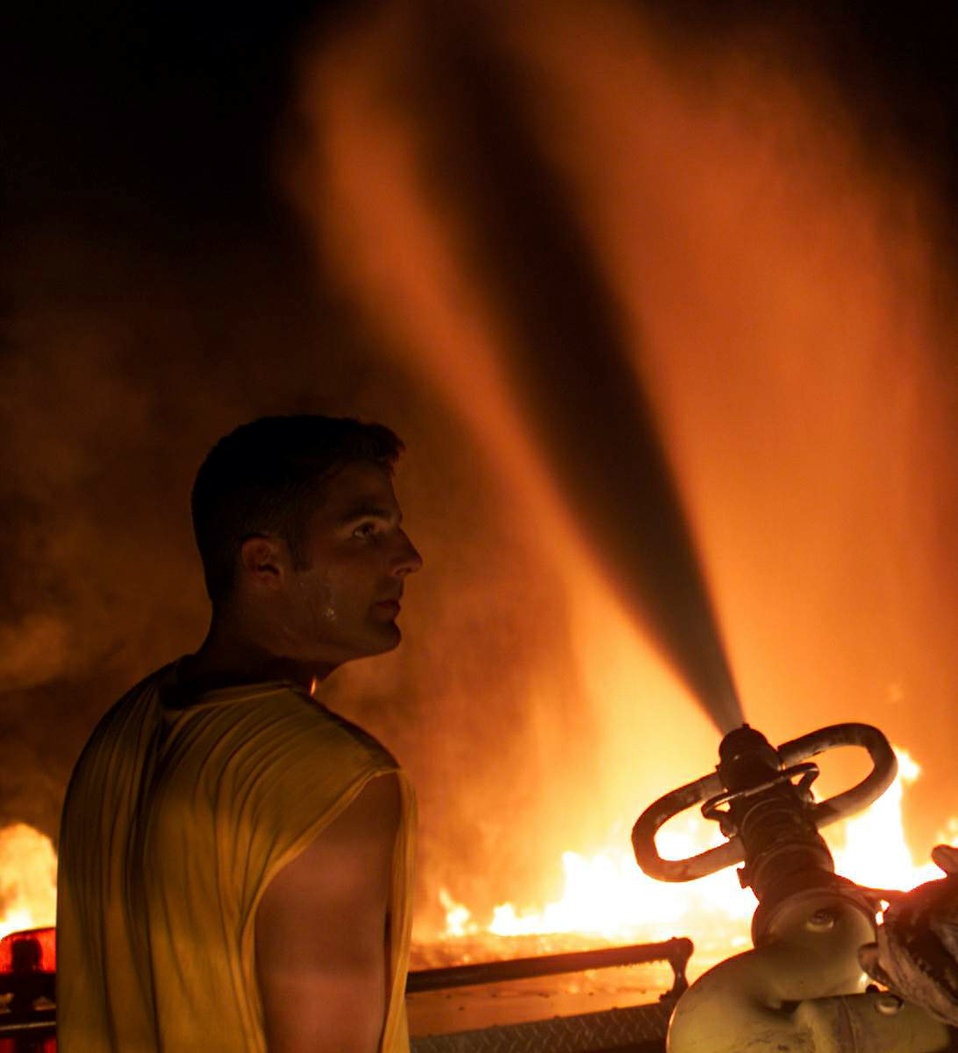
Ready, aim, fire

OPERATION ENDURING FREEDOM (AFPN) -- Airman 1st Class Christopher Prince, assigned to the 379th Expeditionary Civil Engineer Squadron fire protection flight, cools superheated columns of air and smoke created by a planned bonfire at Al Udeid Air Base, Qatar. Fire protection officials built the bonfire to eliminate a large amount of scrap wood, which had become a health and safety risk. Air Force firefighters used the training opportunity to see how their vehicles and the base's water system would perform during a large fire. Prince is deployed to Al Udeid from Eglin Air Force Base, Fla.